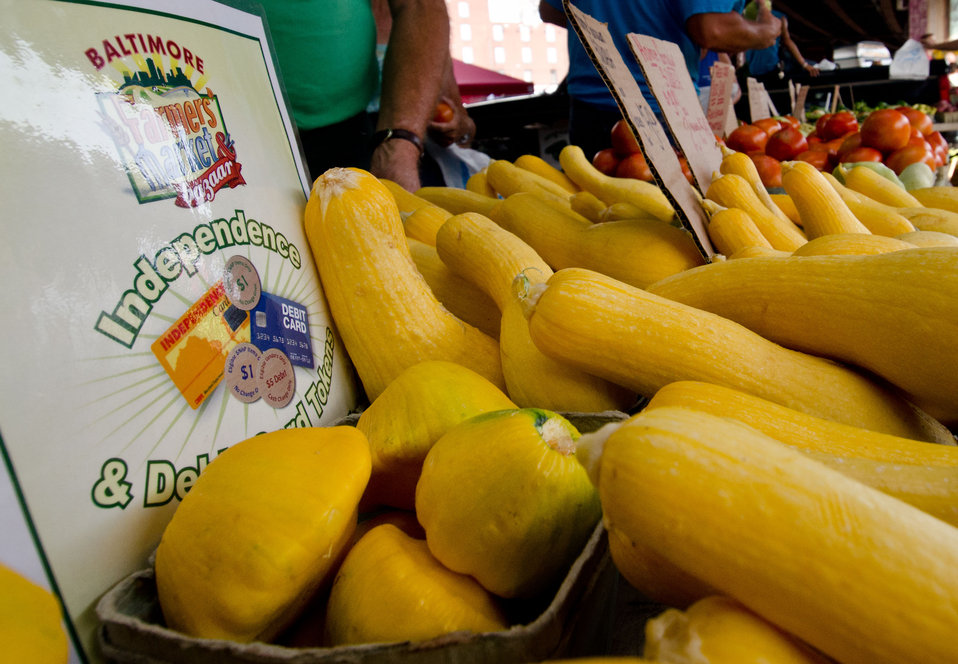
Customers at Baltimore’s Farmers Market and Bazaar Welcome Center look for vendors who display the sign on the left to know they accept the market’s own wooden tokens in Baltimore, MD on Sunday, July 8, 2012. Baltimore’s Farmers Market and Bazaar Welcome Center has a new wireless electronic card reader that accepts the U.S. Department of Agriculture’s (USDA) Food Nutrition Service’s (FNS) Supplemental Nutrition Assistance Program (SNAP) Electronic Benefits Transfer (EBT) cards, Baltimore Bucks, and debit cards.